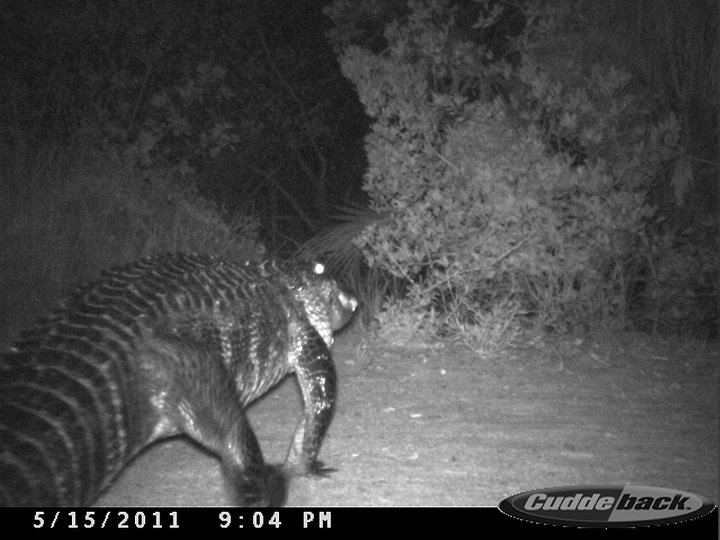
american crocodile or alligator

J.N. Ding Darling National Wildlife Refuge, FL
Camera trap photo: USFWS